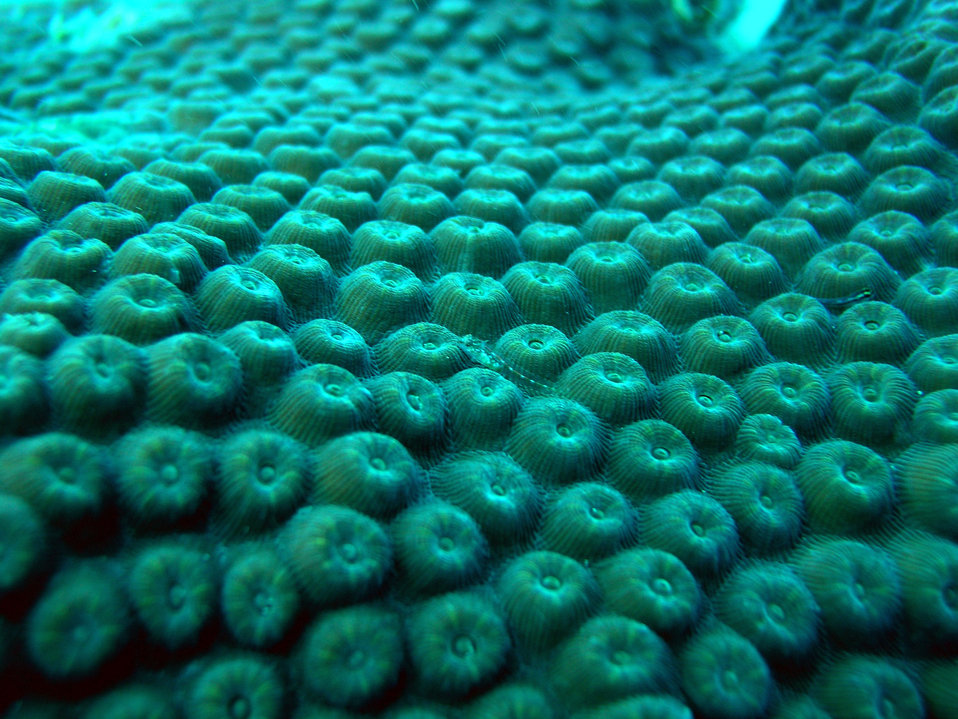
Translucent triplefin (Enneanectes sp.) on a great star coral (Montastraea cavernosa)